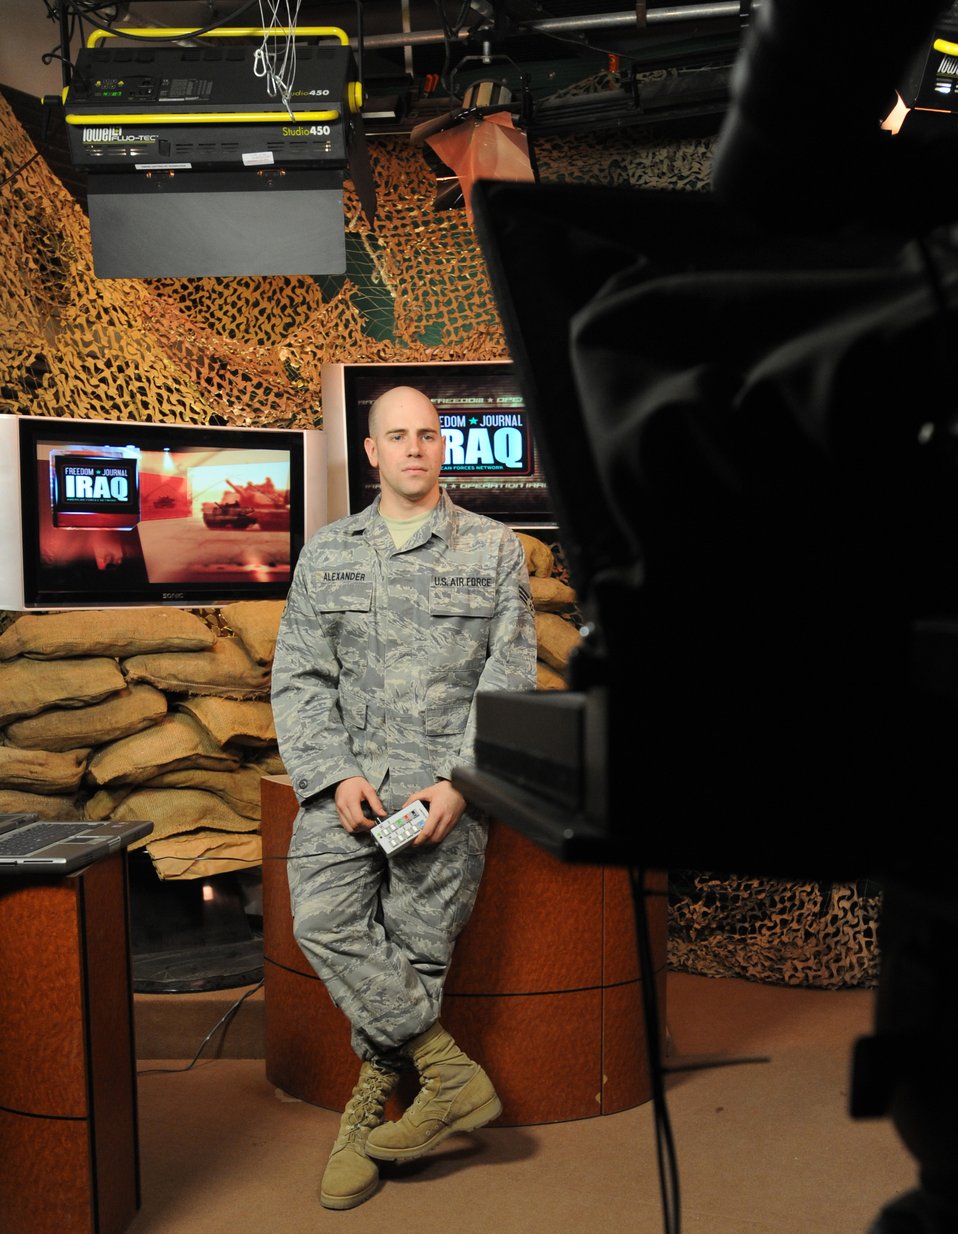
AFN-Iraq

Senior Airman Tyler Alexander, a broadcaster with the American Forces Network-Iraq, reads from a teleprompter during a broadcast March 4 in Baghdad. Sergeant Alexander is deployed from Wiesbaden, Germany.